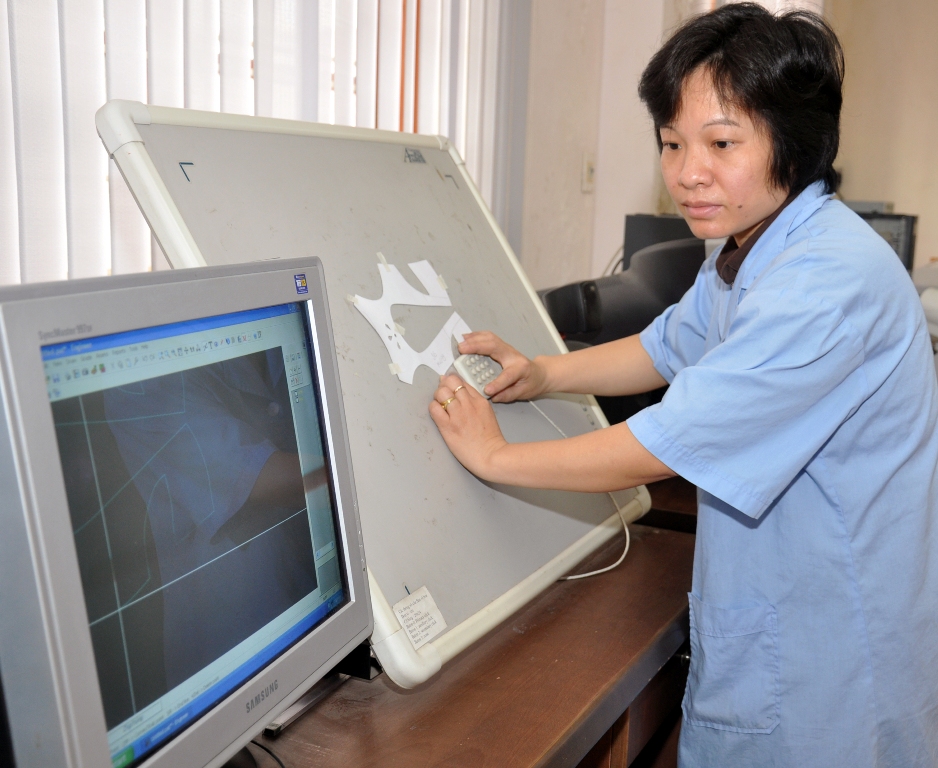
USAID supports economic growth in Vietnam.